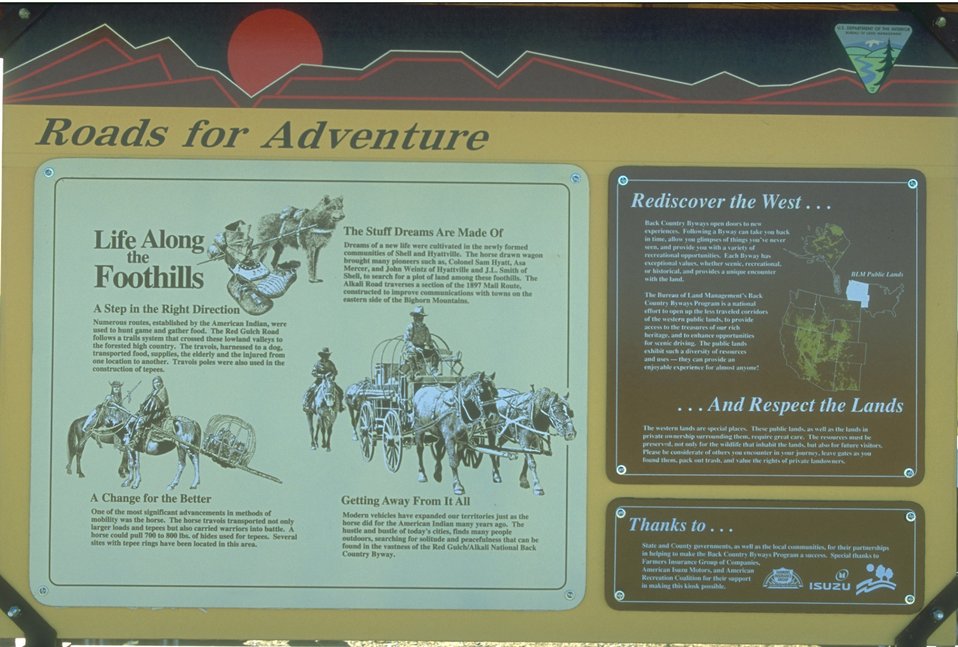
Red Gulch/Alkali Back Country Byway, Worland Field Office.